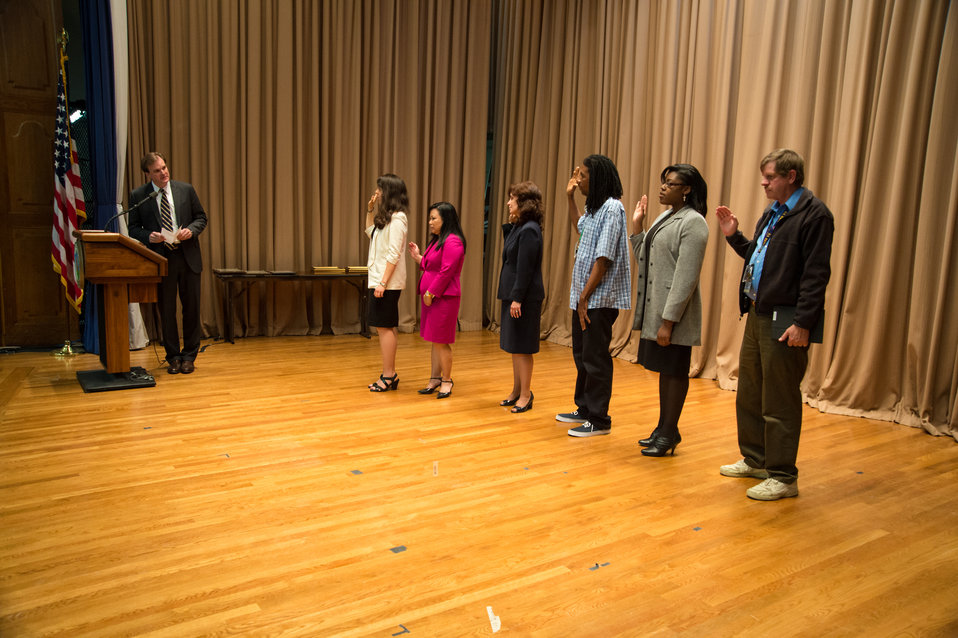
U.S. Department of Agriculture (USDA) Natural Resources and Environment Under Secretary Robert Bonnie makes opening remarks and swore in six new employees USDA, Karen Biala, Food and Nutrition Service, Mai Dinh, Office of General Council, Jane Doherty, Food Safety Inspection Service, Duane Howard, Agricultural Research Service, Michelle Mills, Natural Resources Conservation Service and Brian Leake, Agricultural Research Service at the Asian Pacific American Heritage Observance at USDA in Washington, D.C. on Thursday, May 22, 2014.